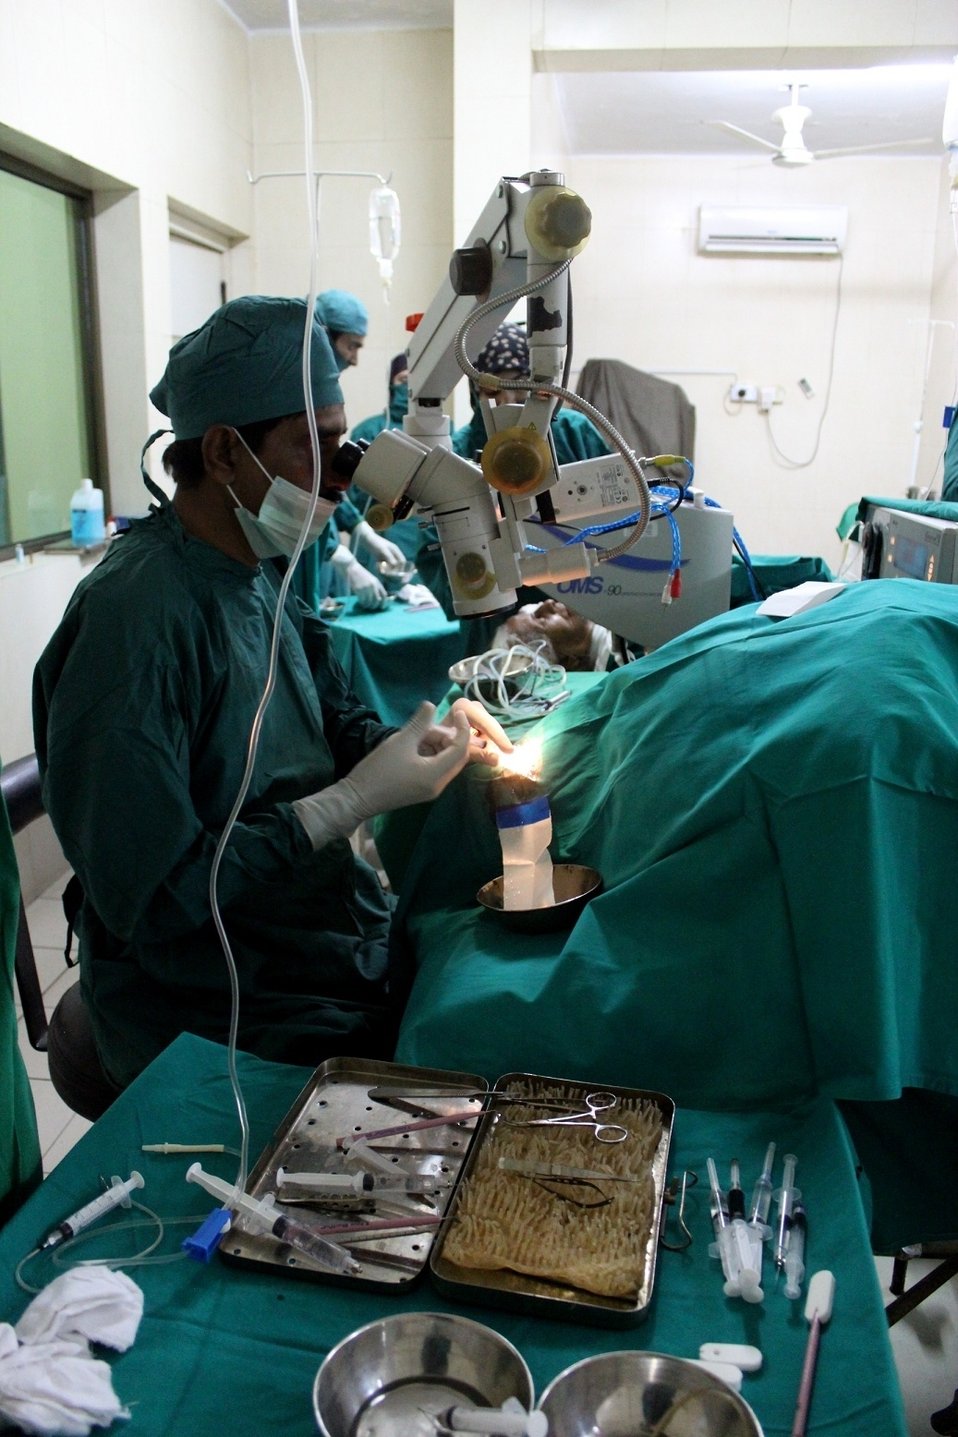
LBRT3